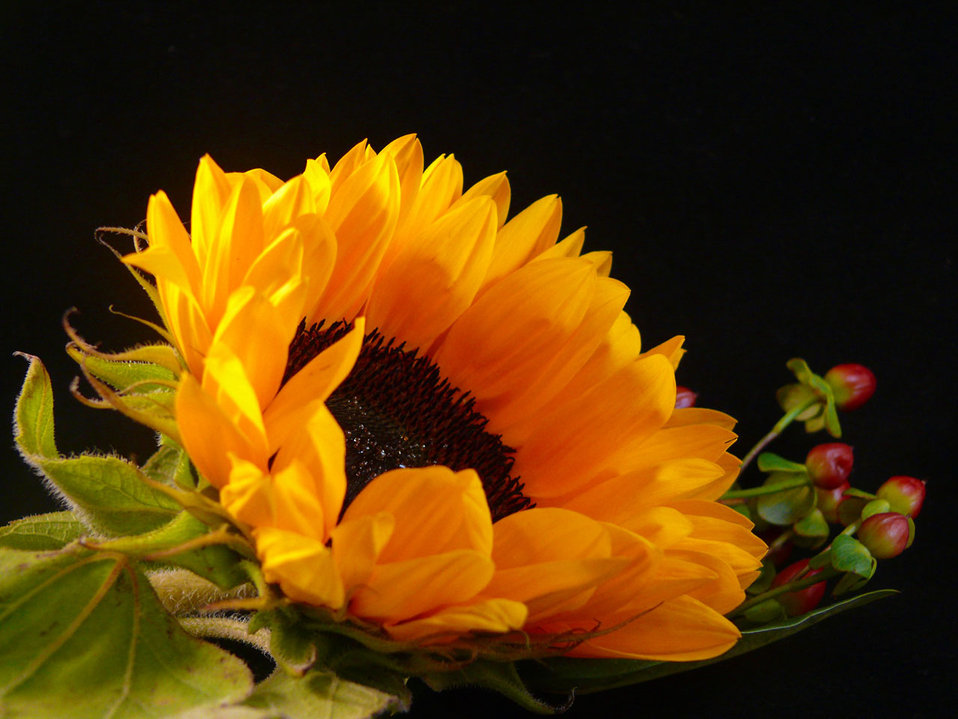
Sunflower on black backround.